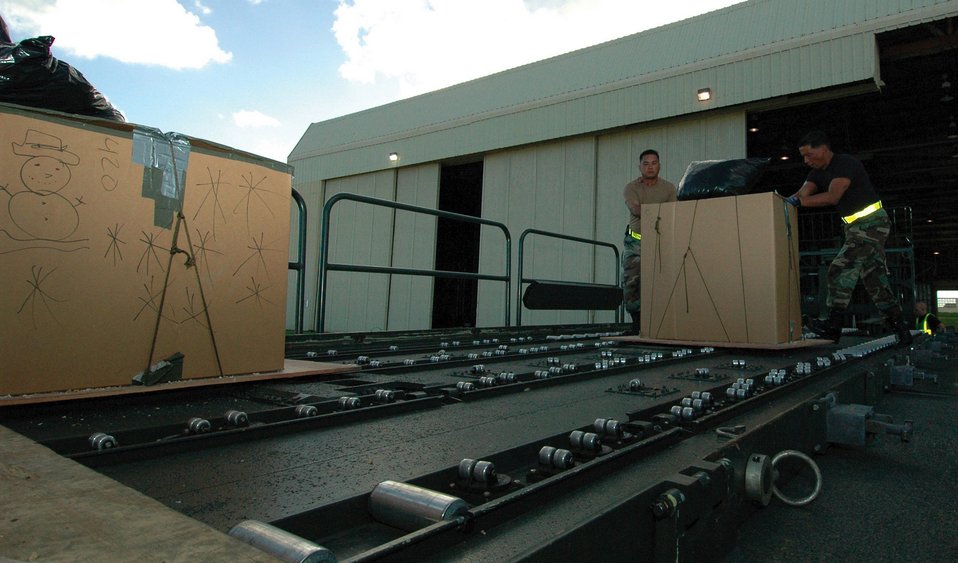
Airmen 'drop' in to help islanders

ANDERSEN AIR FORCE BASE, Guam (AFPN) -- Staff Sergeant Jesse Aquino and Senior Airman Ronald Raguindin load pallets filled with supplies for the Micronesian islanders The donated food items will be used in this year's Operation Christmas Drop, a 53-year-old tradition. C-130 Hercules aircraft from Yokota Air Base, Japan, loaded up the donated gifts and